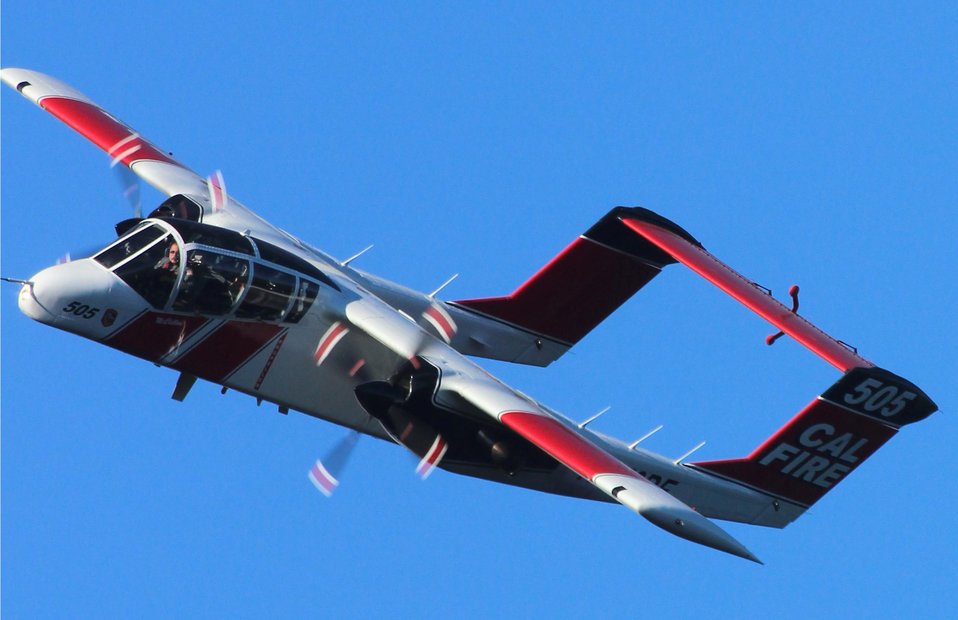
An OV-10 lead plane flies with a crew of two, a contract pilot and the California Fire Air Tactical Group (CAL FIRE ATGS) Supervisor, whose job it is to coordinate all aerial assets on a fire with the Incident Commander on the ground. The OV-10 also leads firefighting air tankers through their intended flight path over the Rim Fire target area of the. The Rim Fire in the Stanislaus National Forest near in California began on Aug. 17, 2013 and is under investigation. The fire has consumed approximately 199,237 acres and is 32% contained.